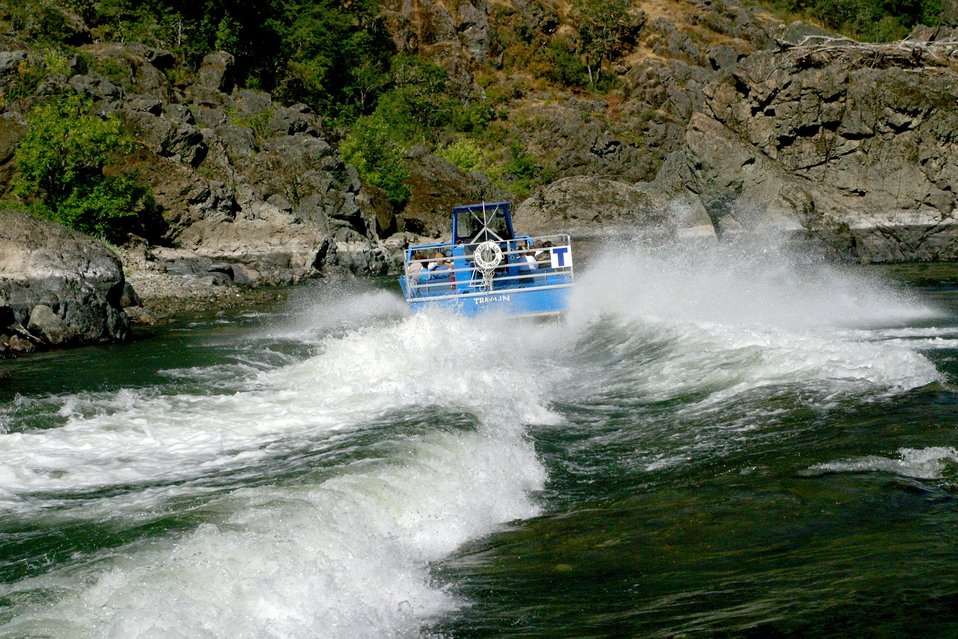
A jet boat entering Hellgate Canyon.